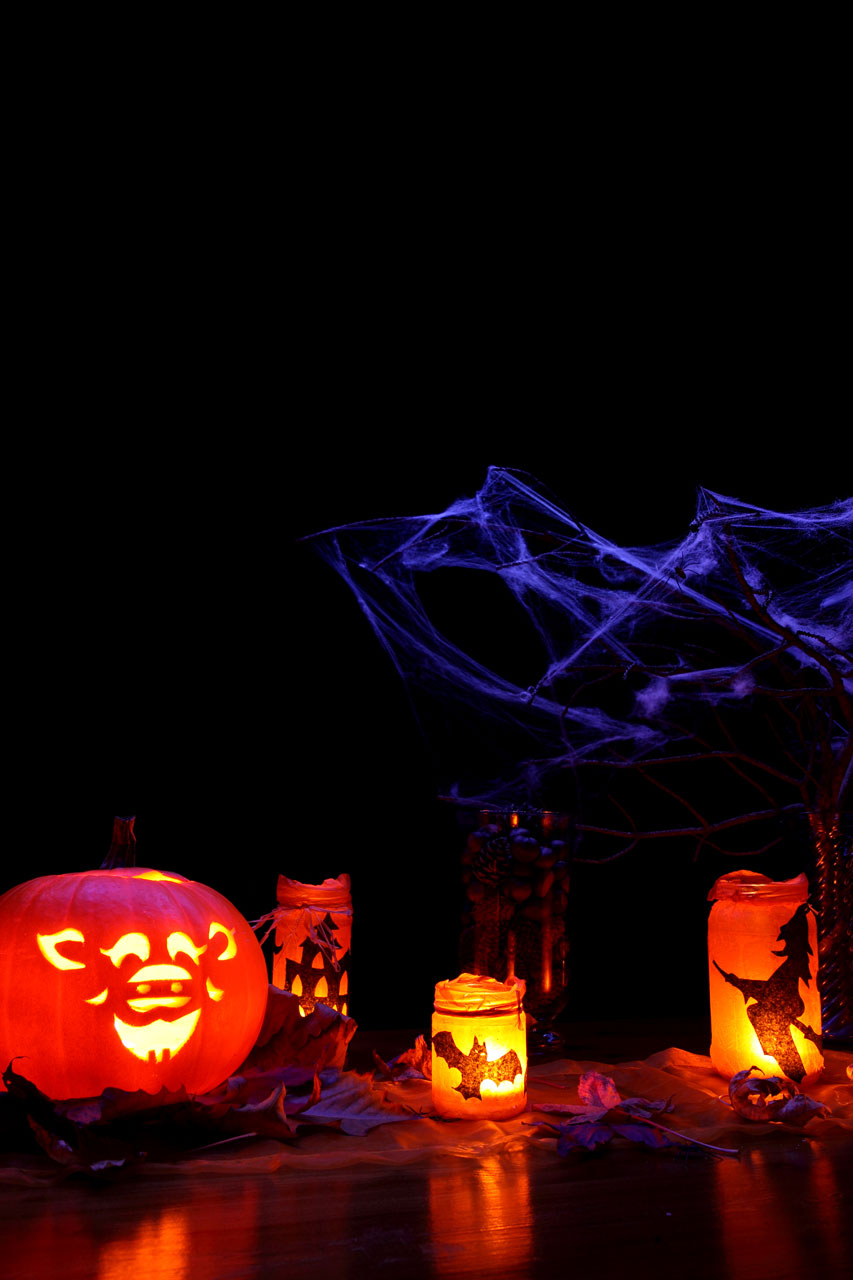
Halloween lights on dark background.